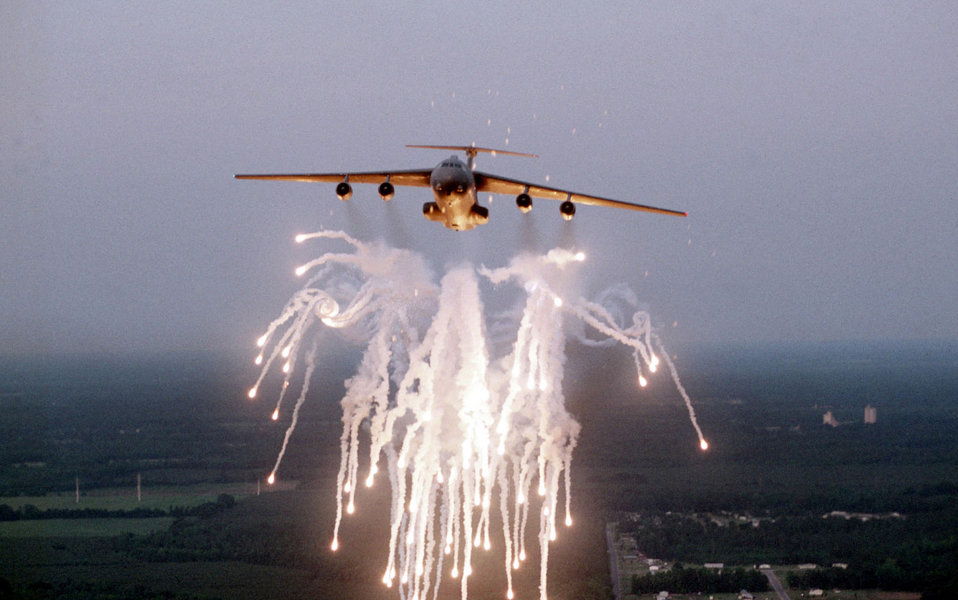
Fireworks display

FILE PHOTO -- The C-141B Starlifter is the workhorse of the Air Mobility Command. The Starlifter fulfills the vast spectrum of airlift requirements through its ability to airlift combat forces over long distances, deliver those forces and their equipment either by air, land or airdrop, resupply forces and transport the sick and wounded from the hostile area to advanced medical facilities. The C-141 force, nearing nine million flying hours, has a proven reliability and long-range capability. In addition to training, worldwide airlift and combat support, the C-141 has amassed a laudatory record in response to humanitarian crises. The C-141, with its changeable cargo compartment, can transition from rollers on the floor for palletized cargo to a smooth floor for wheeled vehicles to aft facing seats or sidewall canvas seats for passengers, quickly and easily, to handle over 30 different missions.